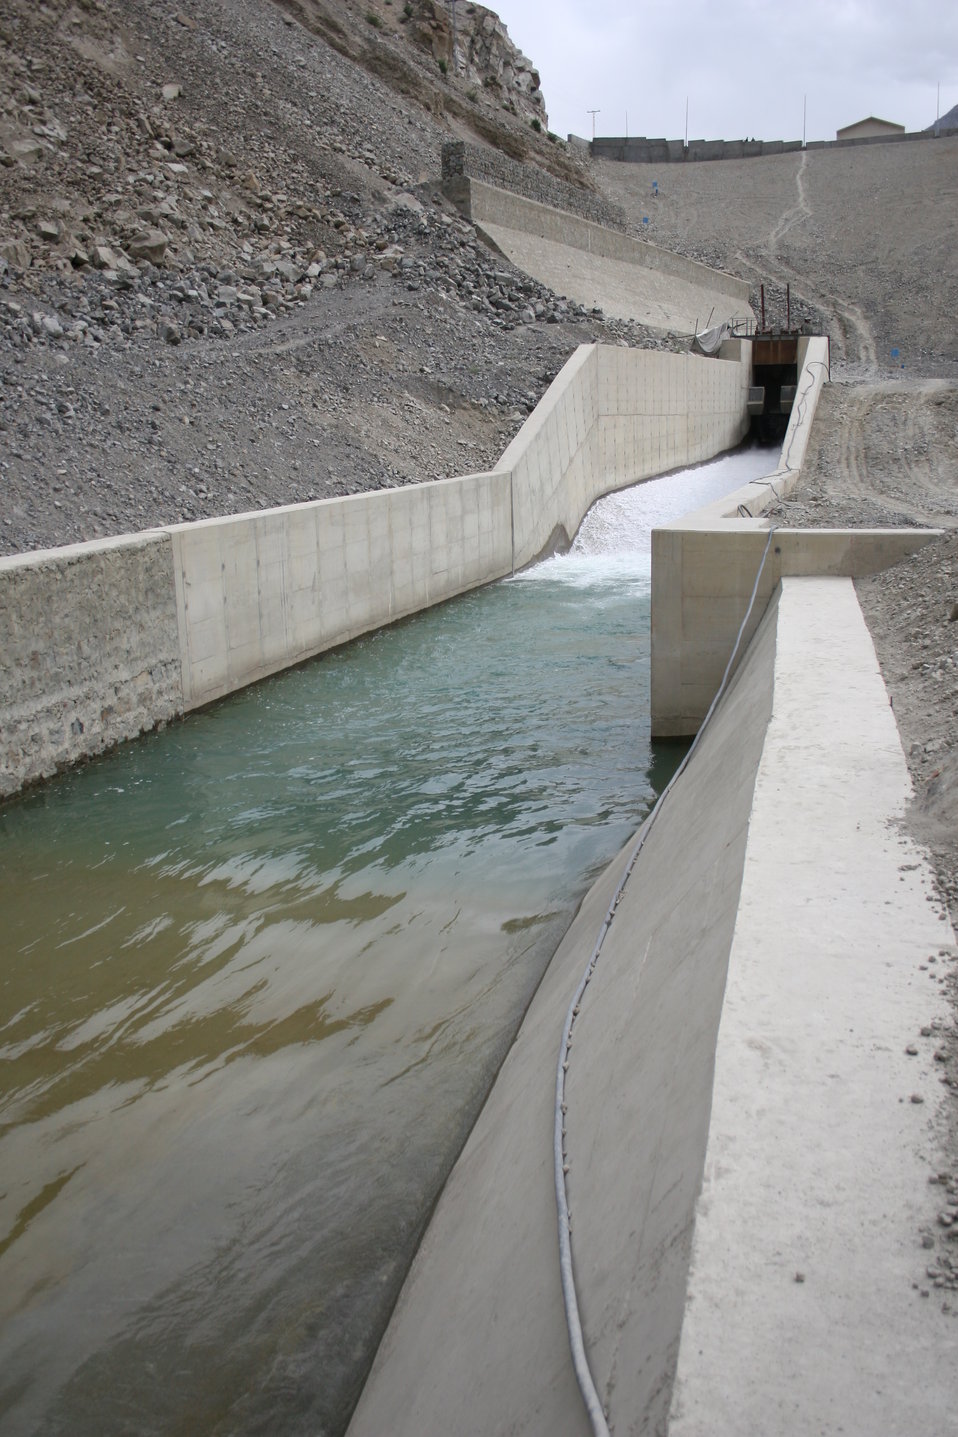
Irrigation- Satpara